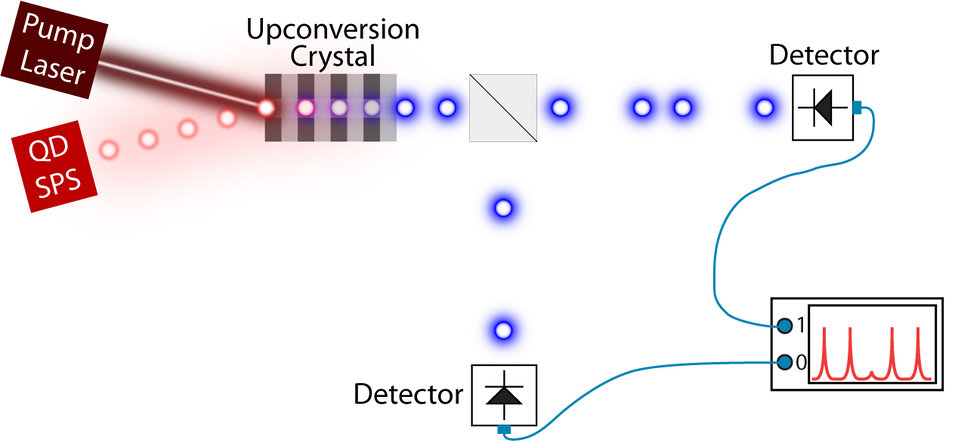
Single Photons; Quantum Dots

In new NIST experiments, the 'color' (wavelength) of photons from a quantum dot single photon source (QD SPS) is changed to a more convenient shade using an up-conversion crystal and pump laser. To test that the process truly acts on single photons without degrading the signal (by creating additional photons), the output is split in two and sent to parallel detectors-true single photons should not be detected simultaneously in both paths.